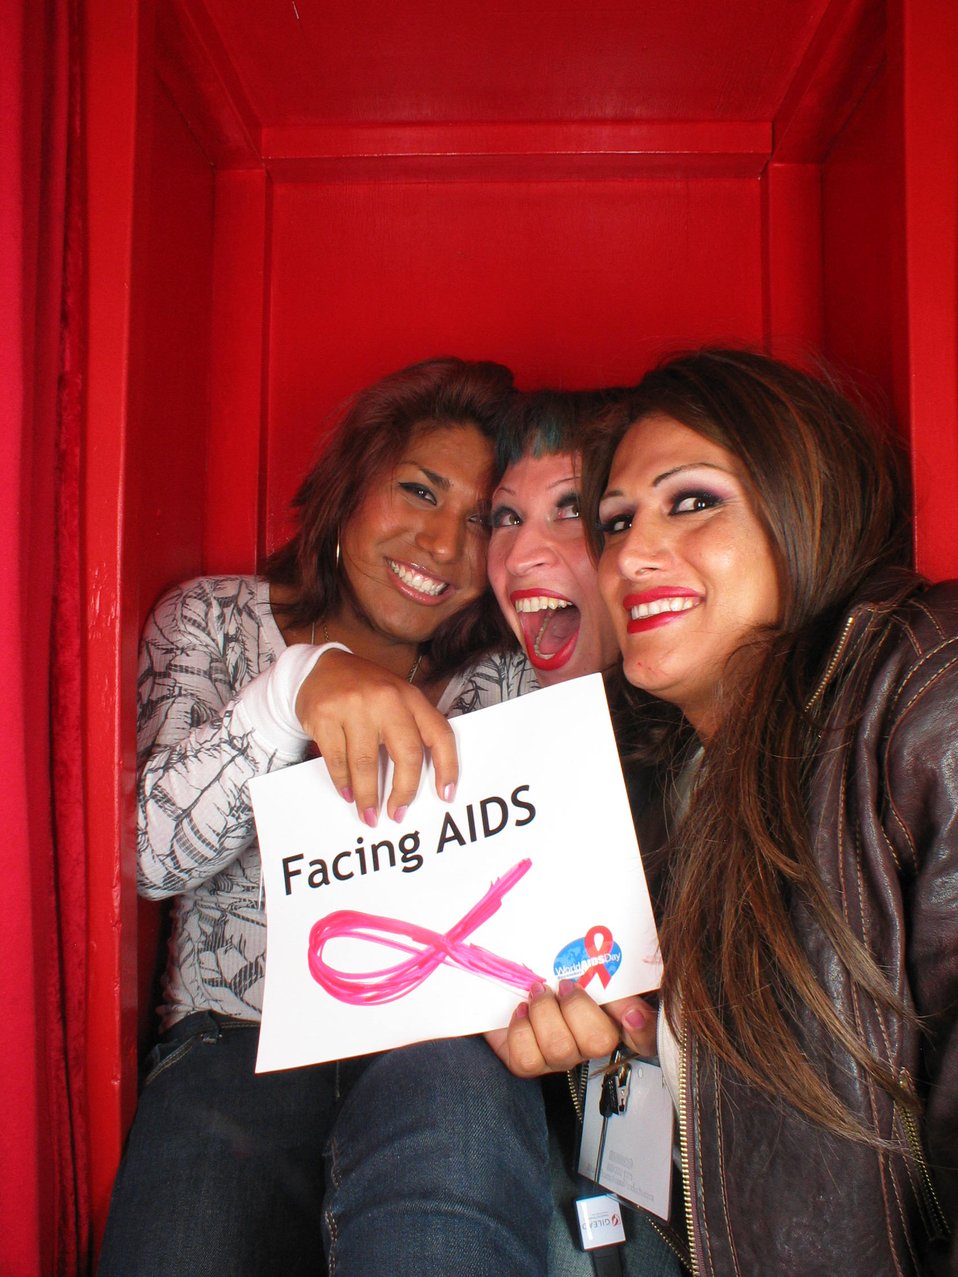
Facing AIDS